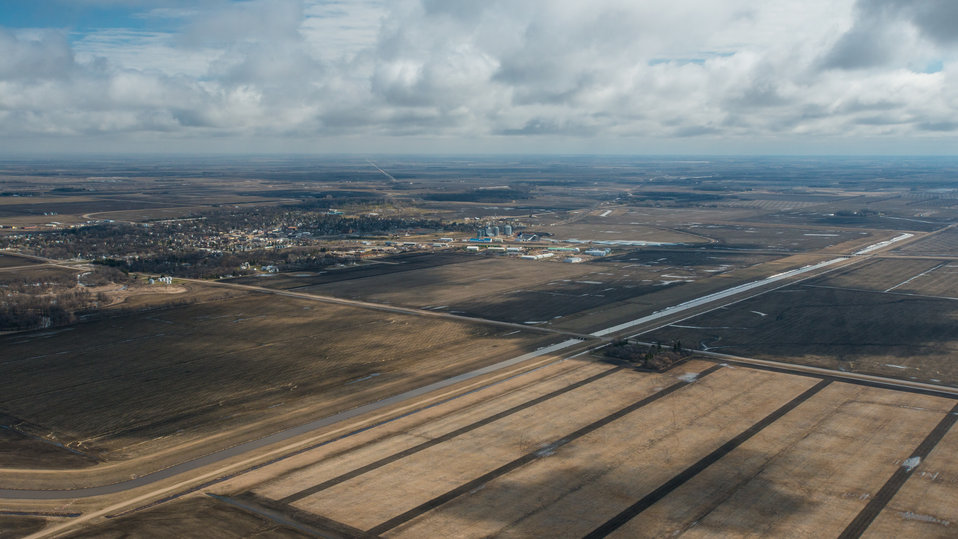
Snake River Diversion, a Public Law PL83-566 Small Watershed Program, at Warren, MN, on Wednesday, May 1, 2013. For information about this and other programs from the USDA Red River Basin Initiative (RRBI) please see www.mn.nrcs.usda.gov/news/features13/RRBI.html.